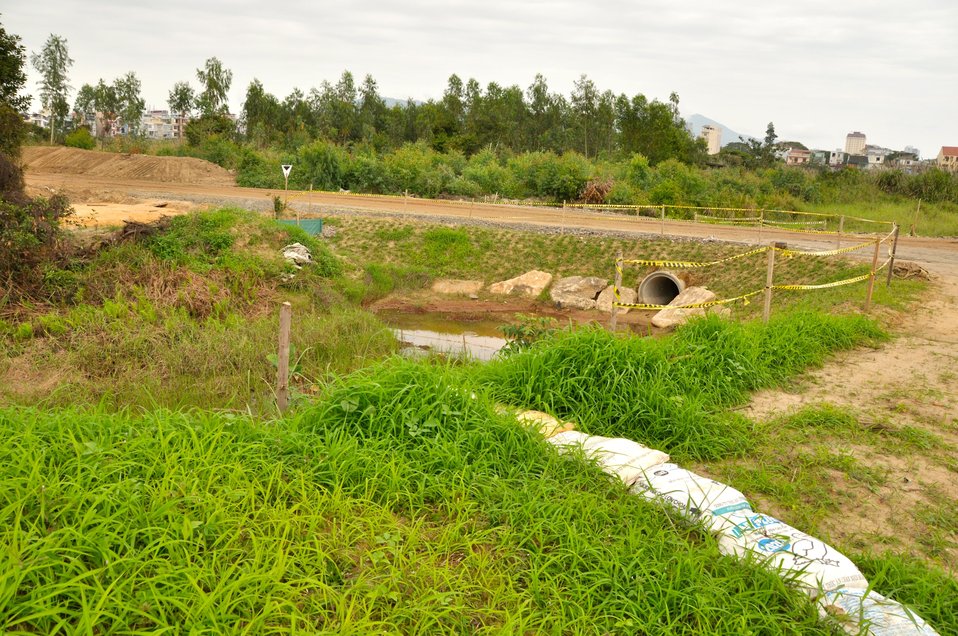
Site Preparation for Environmental Remediation of Dioxin Contamination at Danang Airport

Danang Danang Airport, January 22, 2013

Photo: Richard Nyberg @USAIDVietnam
Remediation Site Visit